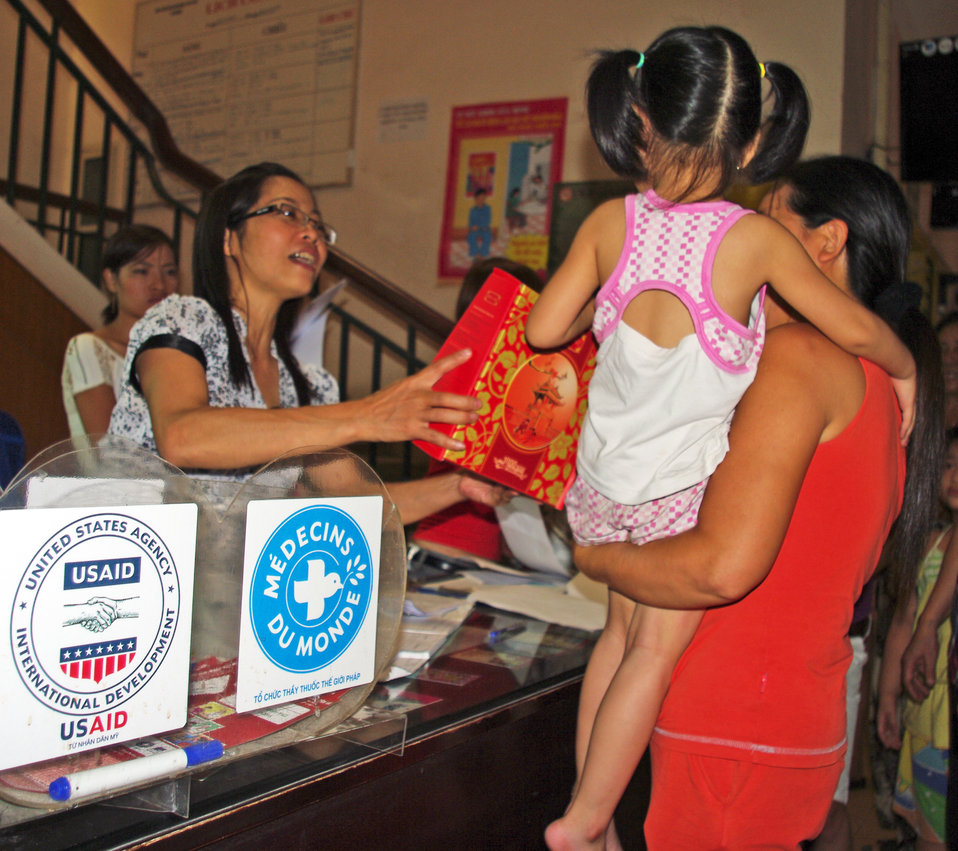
Oprhans and vulnerable children receive free medical check-ups in Hanoi